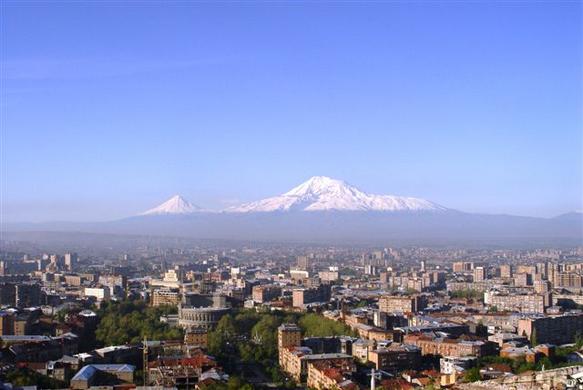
Photo of Yerevan, Mount Ararat